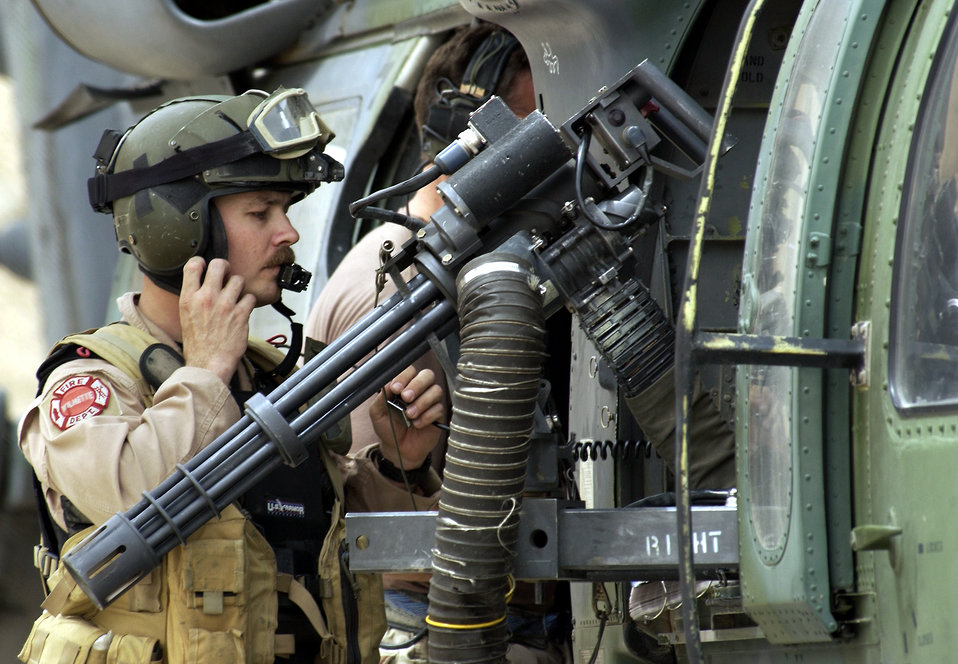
Crew readies

OPERATION IRAQI FREEDOM -- An HH-60G Pave Hawk helicopter crew from the 301st Rescue Squadron prepares to go on a mission April 8 at a forward deployed location in southern Iraq during Operation Iraqi Freedom.